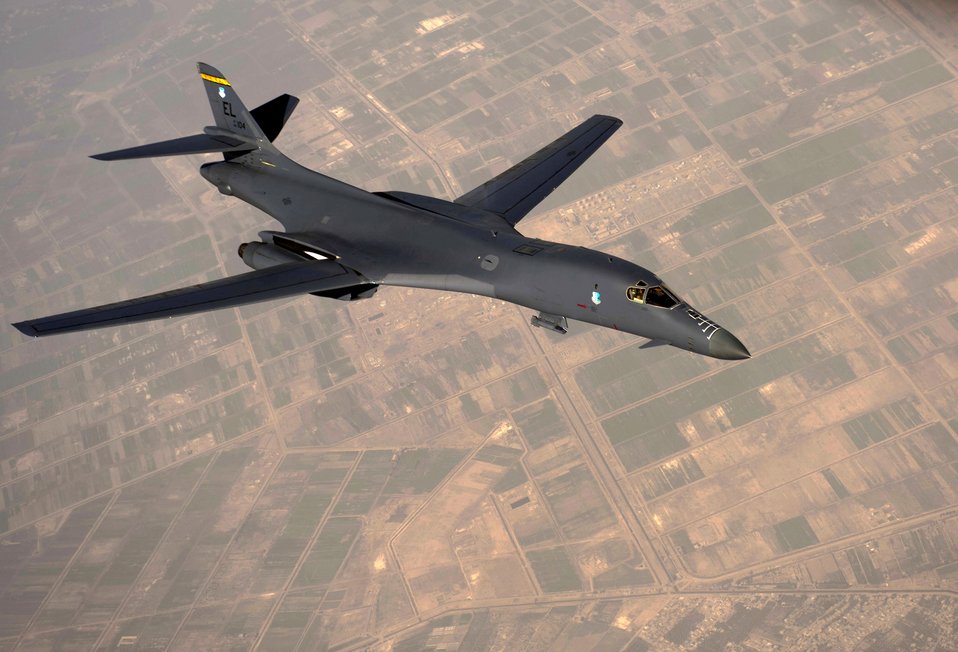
Operation New Dawn

A B-1B Lancer pilot flies Feb 26, 2011, above Iraq, in support of Operation New Dawn.